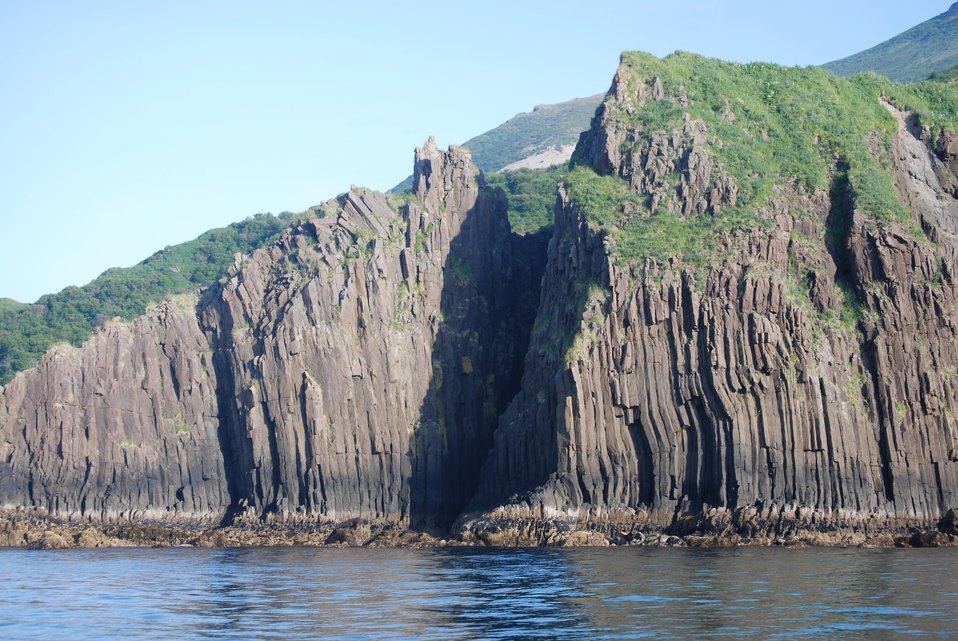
Columnar basalt at Dakavak Bay